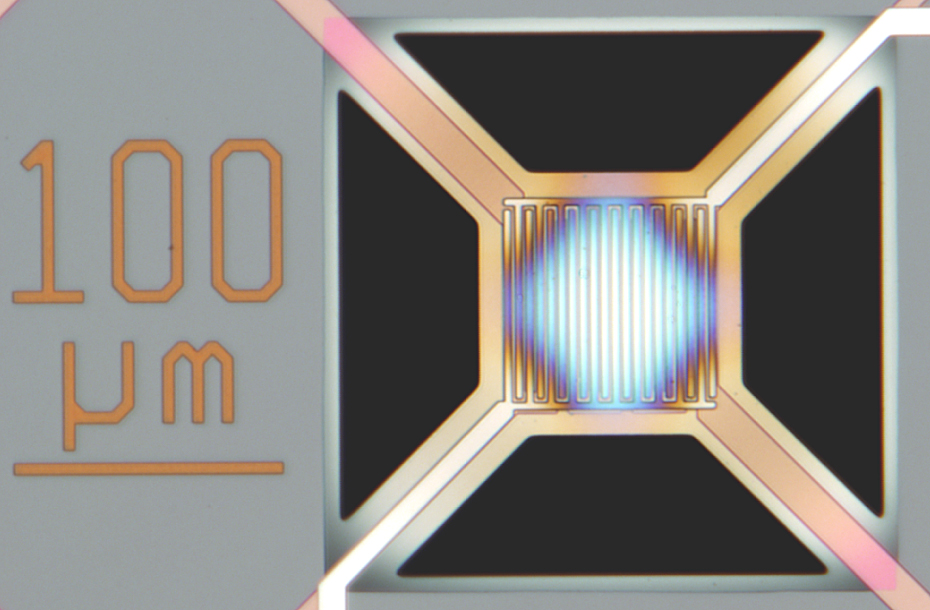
Sensors; Chemical

NIST researchers have developed a new approach for electronic noses. Comprised of 16 microheater elements and eight types of sensors, the tiny device could be a potent tool for applications such as sniffing out nerve agents, environmental contaminants, and trace indicators of disease, in addition to monitoring industrial processes and aiding in space exploration.